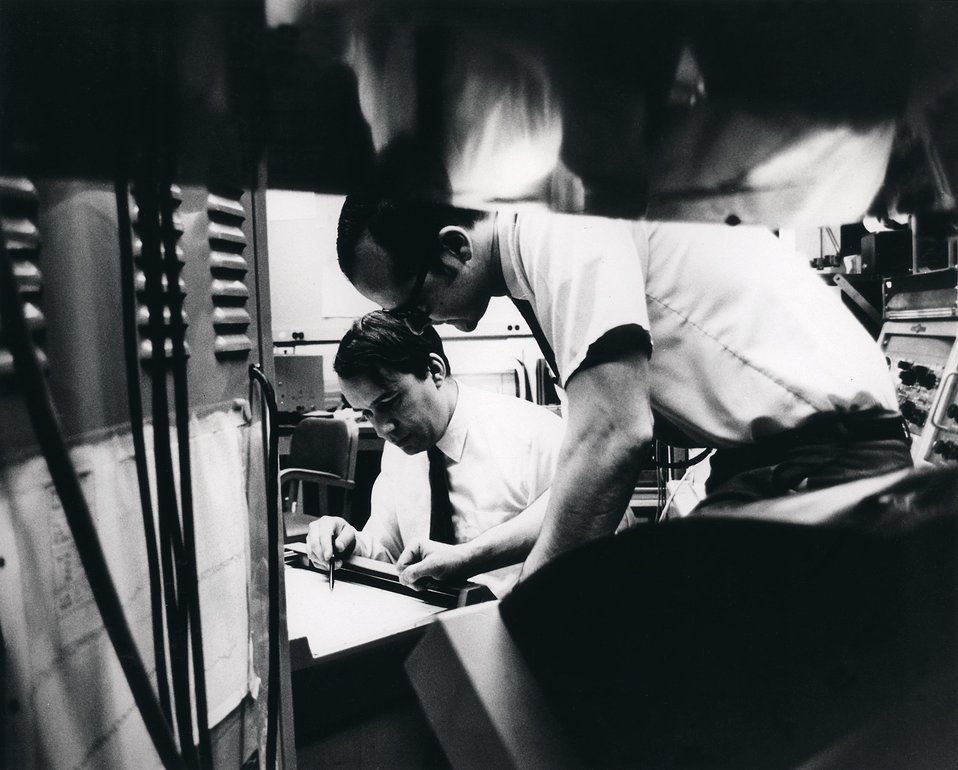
Argonne chemists examine a chart during an experiment with a magnetic spectrograph.
c.1970